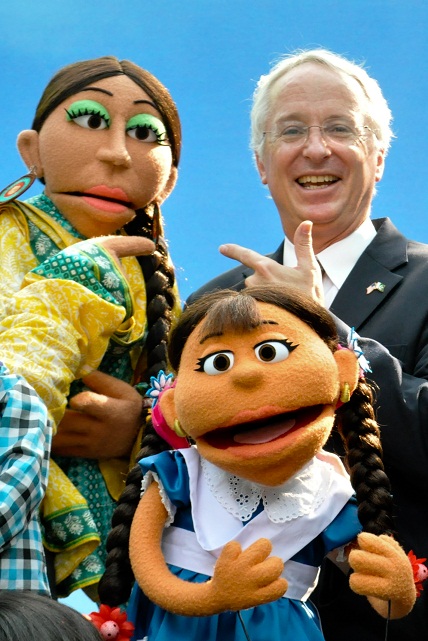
Pakistan Children Television (PCTV)

Lahore, October 5, 2011: U.S. Ambassador Cameron Munter standing with a puppet of a new USAID-sponsored Pakistani children’s TV show Sim Sim Hamara that will be launched later this year.

Sim Sim Hamara is a new Pakistani puppet show that has been designed under the USAID-funded four-year, $20-million Pakistan Children Television (PCTV) Project (puppet-based television programming) for Pakistani children. The show is scheduled to go on air in late December. This take-off on Sesame Street will provide joyful learning opportunities for children in the 4-9 year age group, with a focus on disadvantaged children, especially girls who do not have access to formal schooling. Educational curriculum will focus on language development, critical thinking, and cognitive processes. The program is expected to help alleviate the educational deficits of children without access to schooling and reflect messages of inclusion, mutual respect, and equal opportunity while developing basic literacy and numeracy skills.

In addition to the television show, the USAID-funded project will include: radio programs for parents and other caregivers, live puppet shows, mobile video shows, a website with e-books, games, and children’s songs.